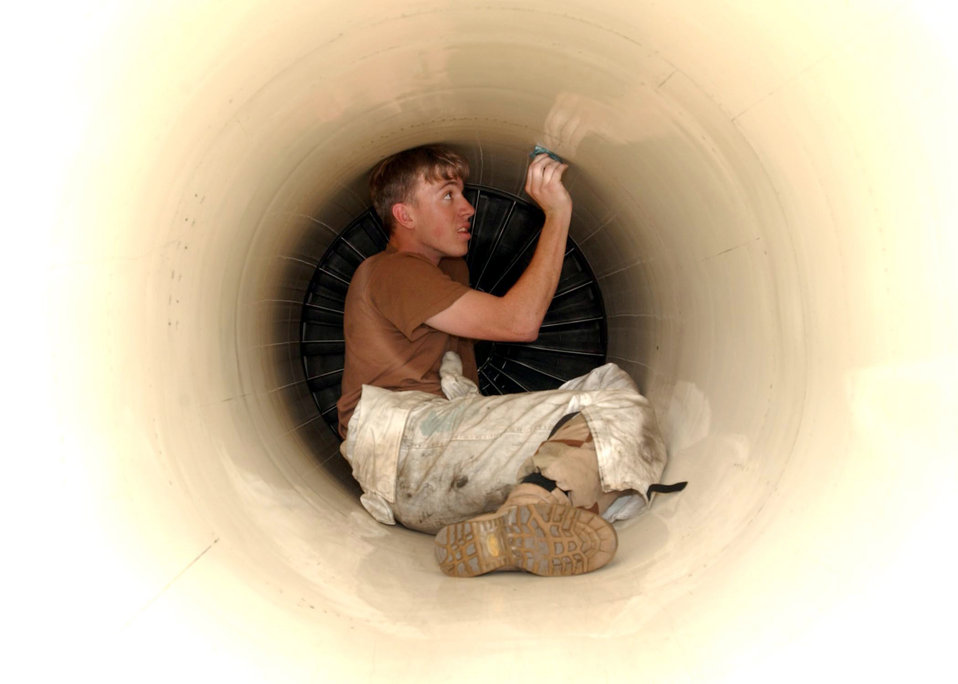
Clean living

SOUTHWEST ASIA -- Airman 1st Class Abram Groves cleans the intake of an F-15 Eagle at a forward-deployed location. Intakes usually get cleaned every other week. Airman Groves is a crew chief with the 391st Expeditionary Fighter Squadron.